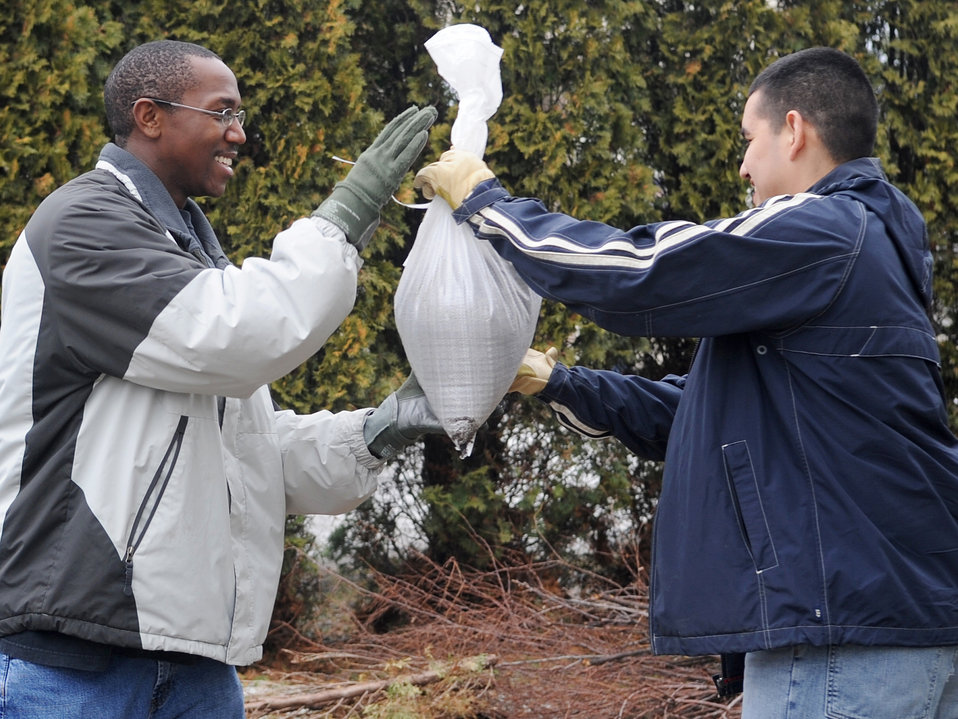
Airmen dedicate time, energy to flood preparations

Staff Sgt. Nathaniel Newkirk (left) and Senior Airman Isaac Zavala are part of a human sandbag chain comprised of neighbors and volunteers in Fargo, N.D. The Airmen are supporting the flood preparation efforts by volunteering at many locations throughout the Red River Valley. Sergeant Newkirk and Airman Zavala are both from the 319th Operations Support Squadron at Grand Forks Air Force Base, N.C.